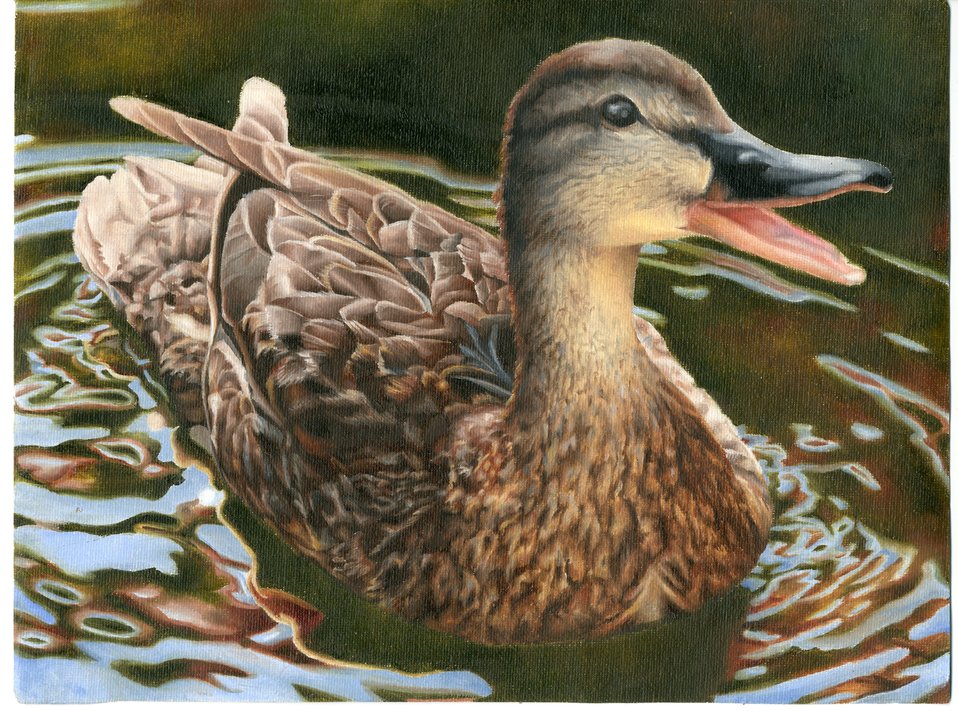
Illinois

2012 Jr Duck Stamp Program
State Best of Show
Illinois